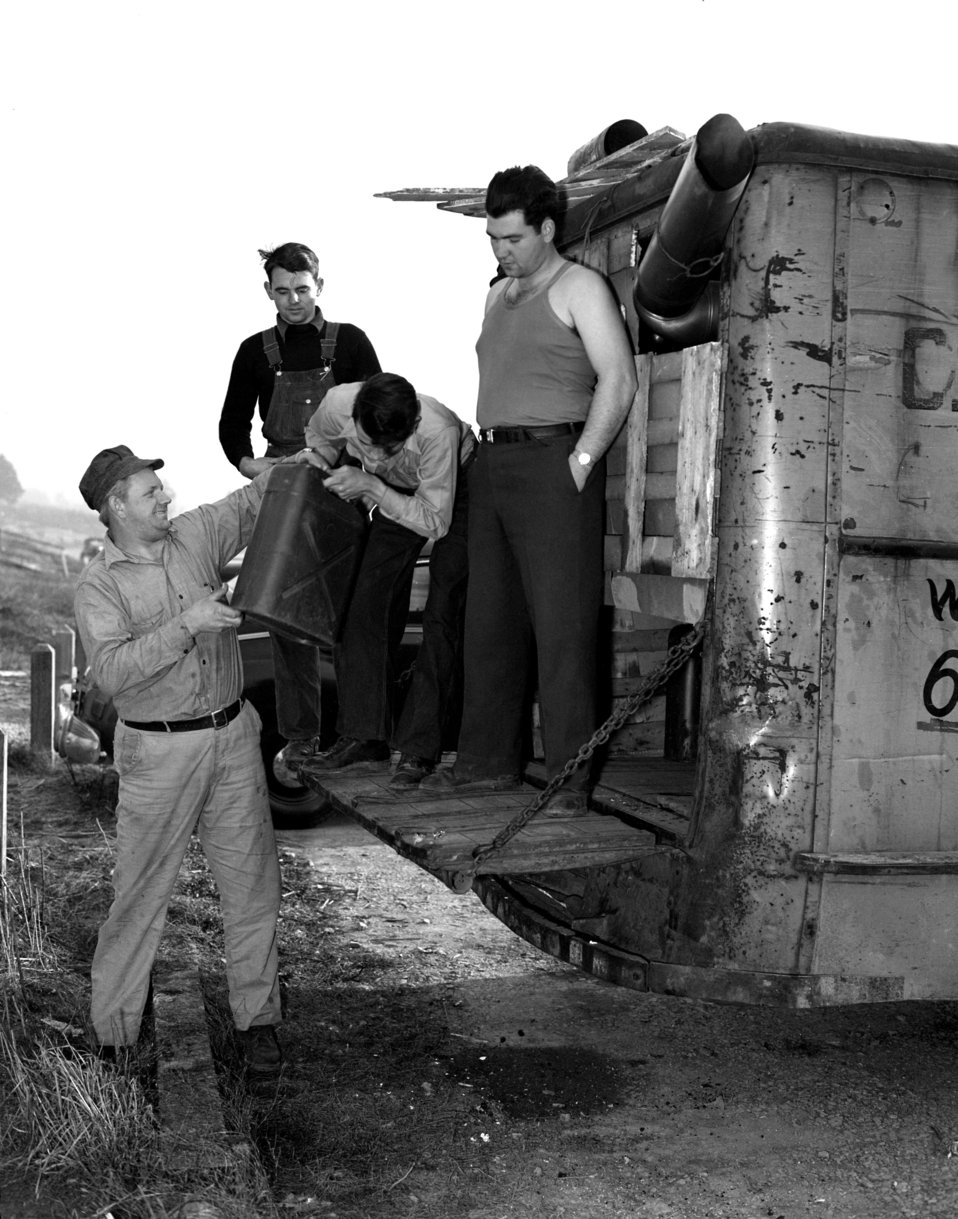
War Assets Auto Sale Oak Ridge 1947

3293-3cpn DOE photo Ed Westcott 2-13-1947 Oak Ridge Tennessee